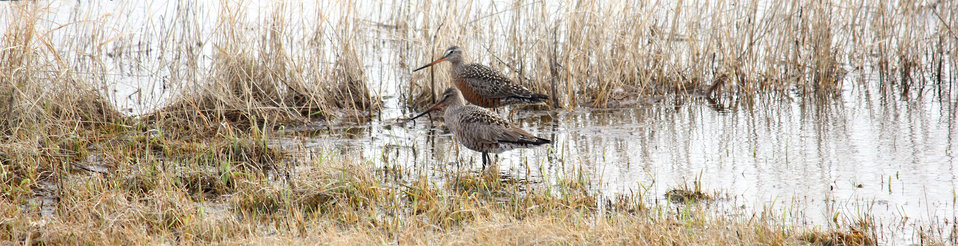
Hudsonian Godwit Pair

These godwits (the first photographed of the season in the Kulm Wetland Management District) were along Highway 11 in McIntosh County. Hudsonian Godwits can be seen migrating through North Dakota on their way from their wintering grounds in southern South America to their breeding grounds in the tundra.